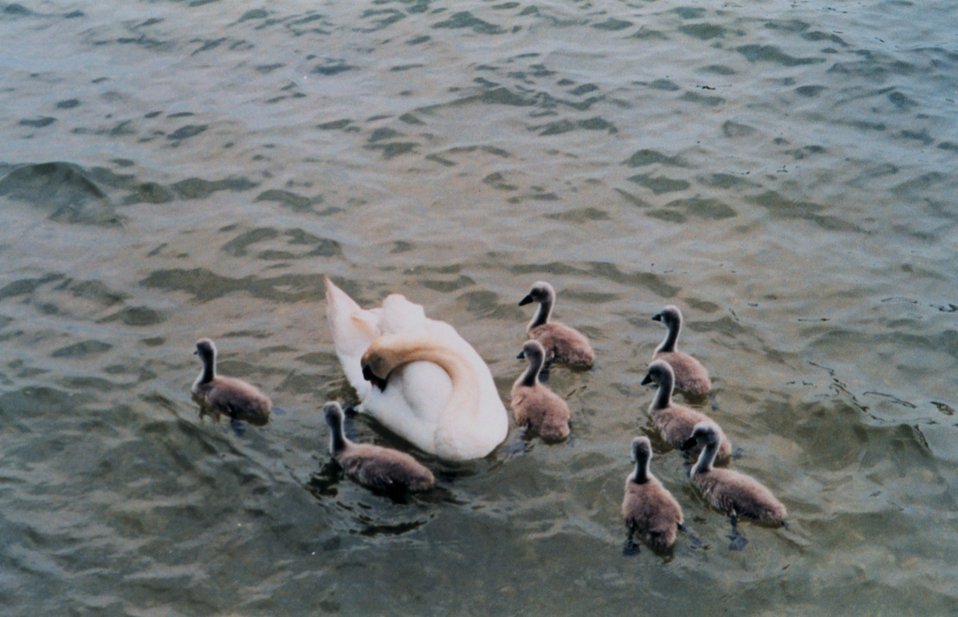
Mute swans with 8 cygnets. Mute swans are an agressive invasive species. There are now over 3,000 mute swans in the Maryland portion of the Chesapeake Bay.